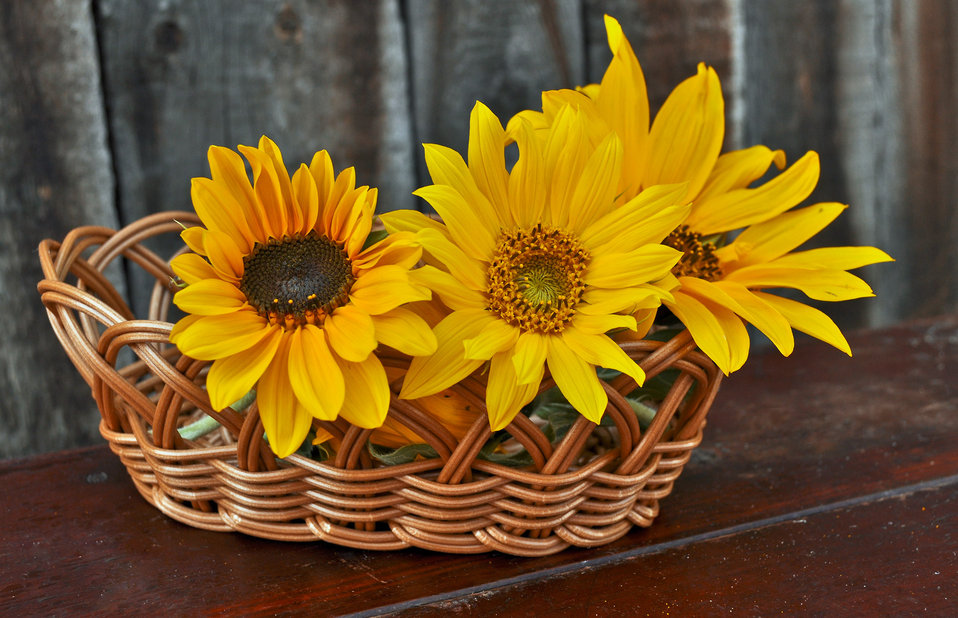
Baskets of flowers sunflower

Flowers sunflowers in a wicker basket..